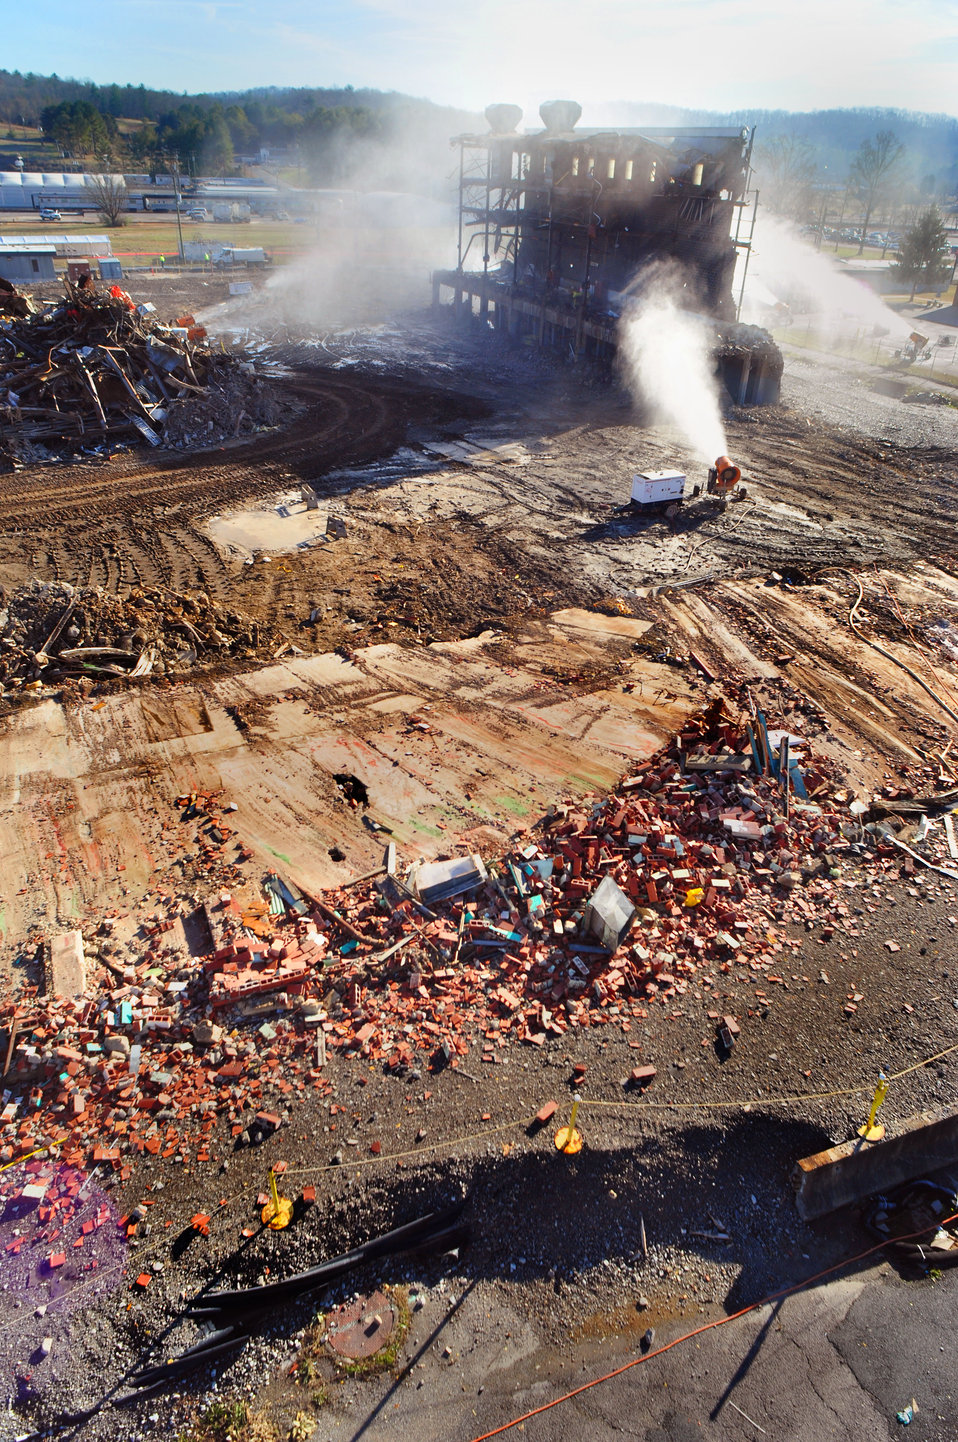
Last Part of K-25 Coming Down Oak Ridge 2013

13-157-1 DOE photo Lynn Freeny 12-19-2013 Oak Ridge Tennessee